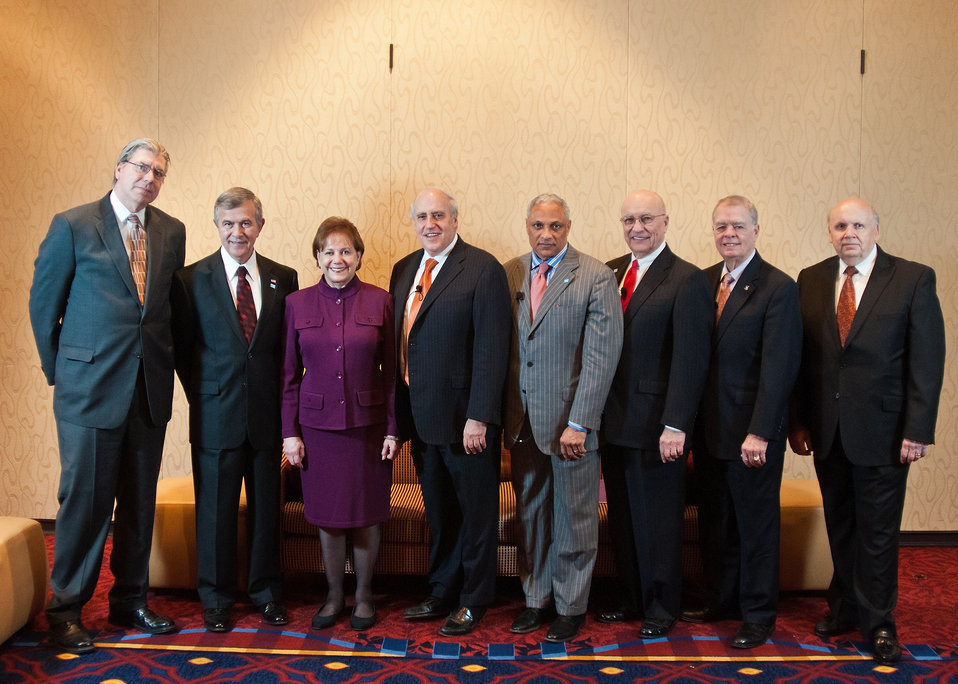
At the 2012 Agricultural Outlook Forum, “Moving Agriculture Forward” in Arlington, VA, held on Thursday, February 23, 2012, 7 former Secretaries of Agriculture sat on the plenary panel “Visions of the Future” hosted by current Agriculture Secretary Tom Vilsack. Chief Economist Joseph Glauber poses with 6 former Agriculture Secretaries (L to R) Senator Mike Johanns (NE), Ann Veneman, Congressman Dan Glickman (KS), Congressman Mike Espy (MS), Clayton Yeutter, John Block, and Chairman of the World Agricultural Outlook Board (WAOB) Gerald Bange.